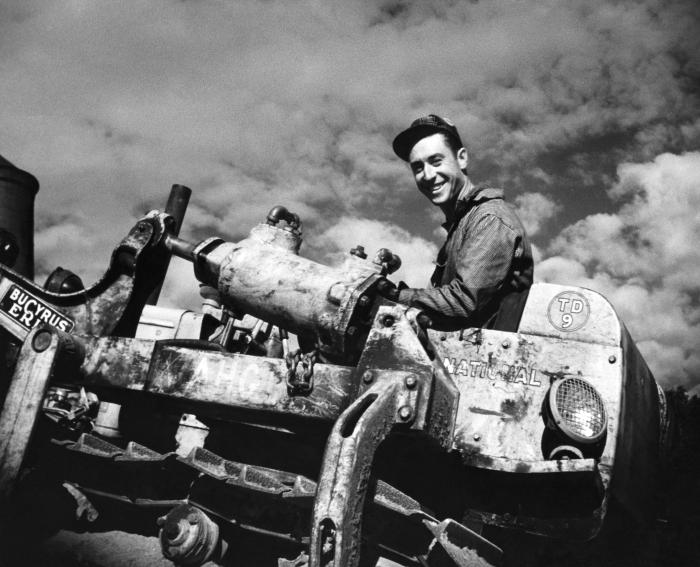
Provided by the Center for Disease Control's (CDC), National Institute for Occupational Safety and Health (NIOSH), this historic 1943 image depicted a male construction worker on a construction site seated atop what appeared to be a hydrolically-controlled Bucyrus Erie� earth-moving vehicle. Note that the man was wearing no protective gear such as goggles, filtered breathing mask, or gloves. Modern day regulations, at minimum, call for use of protective eyewear. (See PHIL 9807)